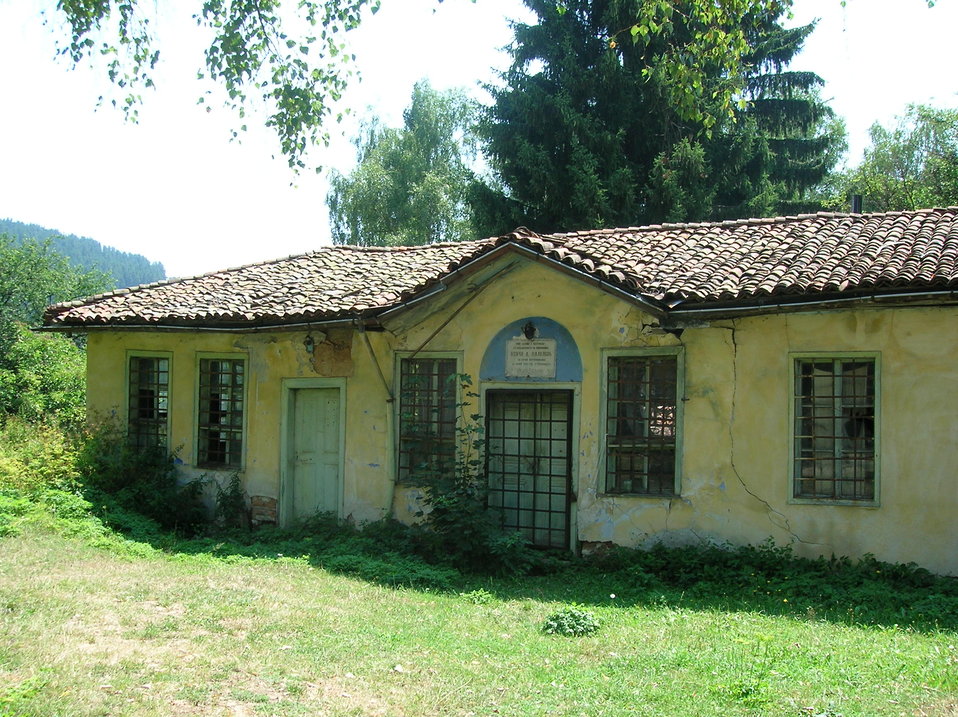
House in front of Church Ouspenie Bogoroditchno, in Koprivshtitsa (Bulgaria). Fran√ßais†: Maison en face de l'√©glise Ouspeni√© Bogoroditchno, √† Koprivchtitsa (Bulgarie).